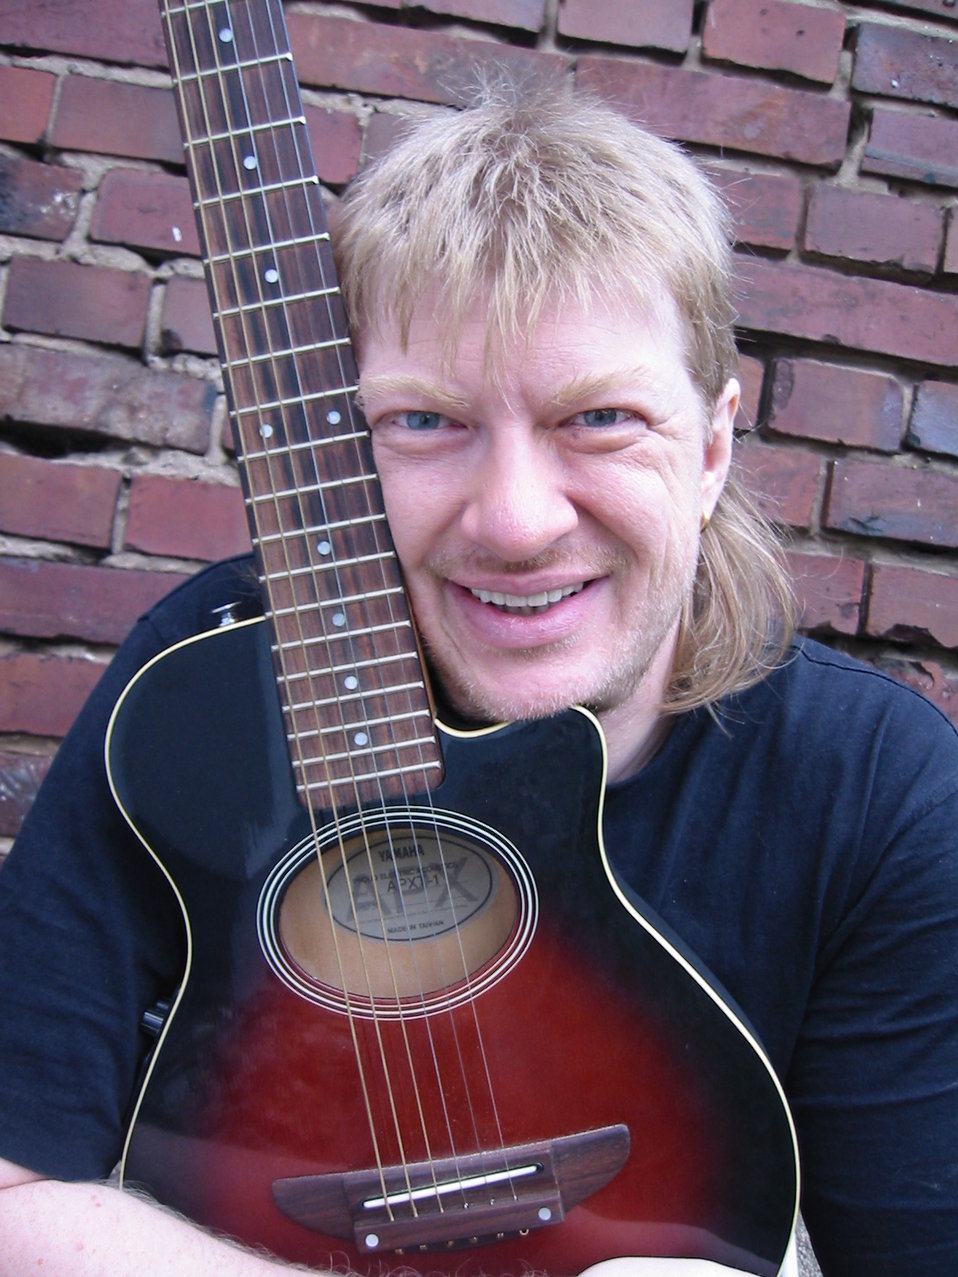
Deutsch: Paddyschmidt01